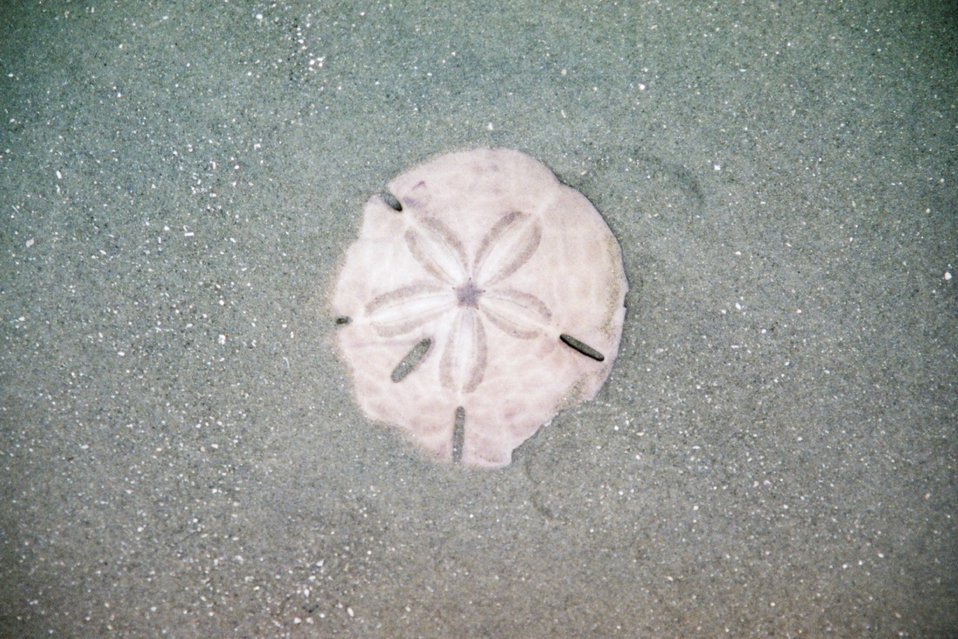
A sand dollar shell left on the beach after the tide receded.